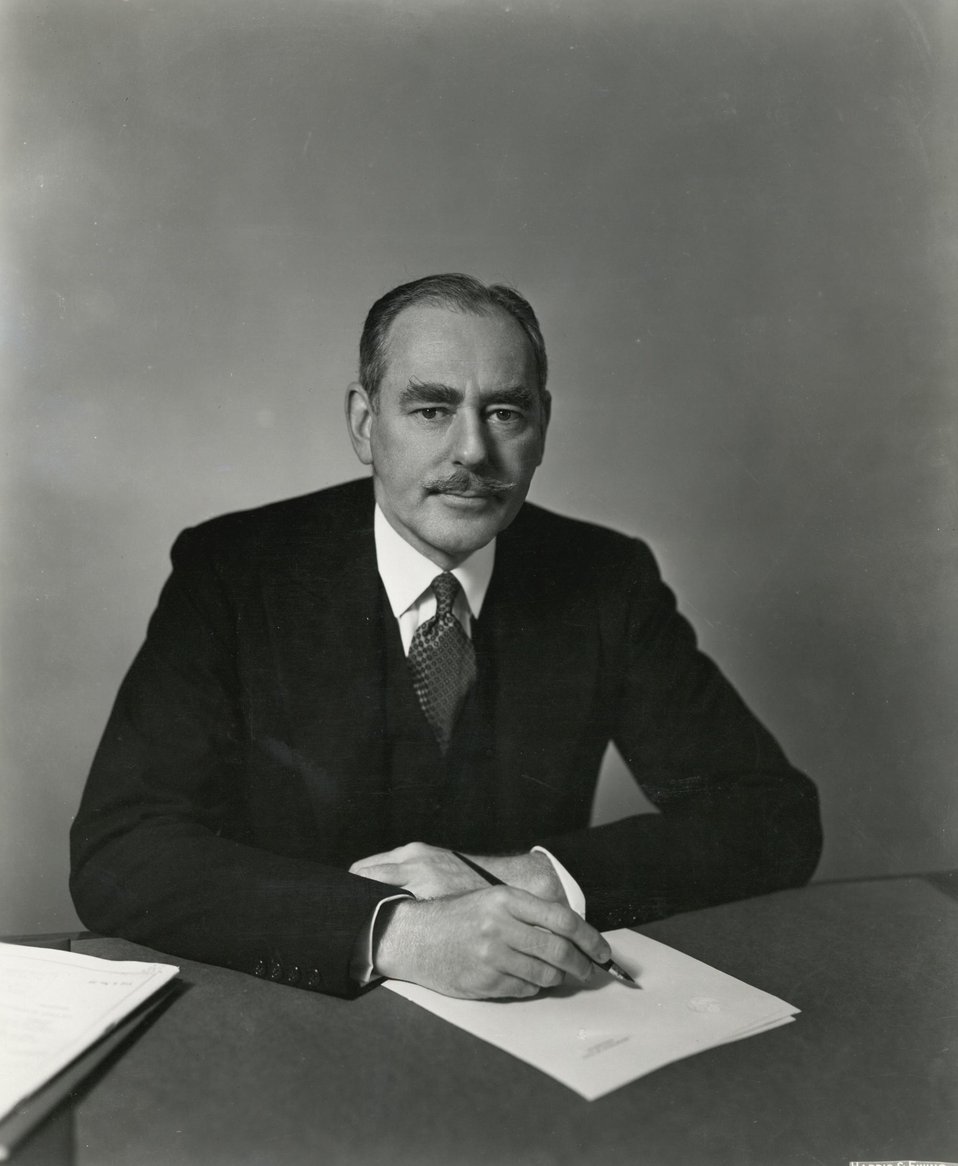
Dean G. Acheson, U.S. Secretary of State, January 21, 1949 to January 20, 1953